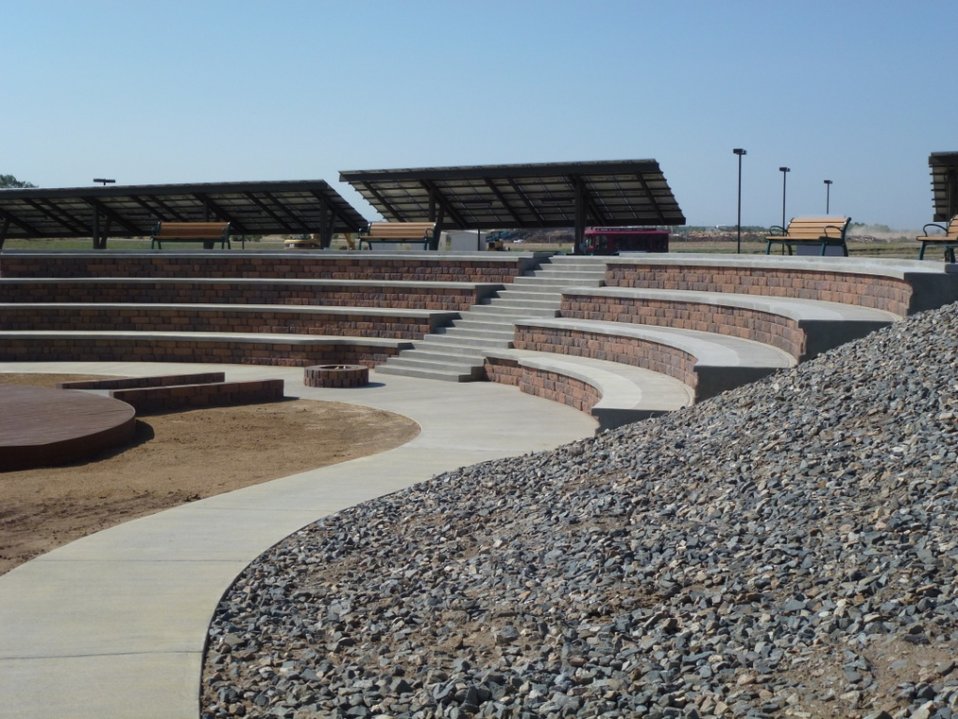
Rocky Mountain Arsenal National Wildlife Refuge’s Amphitheater

Thanks to the work of a Mountain-Prairie Region Refuge Maintenance Action Team (MAT), a new amphitheater was recently erected adjacent to the Rocky Mountain Arsenal National Wildlife Refuge’s visitor center in Commerce City, Colo.

The amphitheater is a fully accessible facility with seating for 175 to 200 spectators. It features a stage and fire pit for special programs. The addition of the amphitheater to the visitor center will enhance interpretive program delivery as part of the facility’s regular visitor services and will be used for special events. Commerce City has also expressed an interest in using the amphitheater for programs of its own.

The project was completed under budget and cost nearly half as much as the bids received from private contractors. According to rough estimates, the U.S. Fish & Wildlife Service saved approximately $70,000. The substantial cost savings was realized by employing the MAT, which is comprised of in-house maintenance workers with various skill sets from several stations across the region. Typically, deferred maintenance dollars pay for the project materials, labor, travel, room and board of MAT members. MAT projects usually take between one to five weeks to complete.

Construction began May 7, 2012 and concluded June 13, 2012 with a one-week pause in the middle of the project to allow MAT members a break. In total, the project took 34 12-hour-work days. The MAT worked more than 2,000 man hours on the project with no time lost due to injury or any safety-related issues.

The Refuge MAT consisted of:
• Rich Iwanski – Bear River Migratory Bird Refuge – Engineering Equipment Operator – Pre-construction organization, MAT team foreman, Equipment Operator and other general work.
• Cameron Fenrich – Mountain-Prairie Regional Office – Civil Engineer – Project Manager, Project Engineer, amphitheater design, on-site inspections, general construction work and overall construction and MAT team organization.
• Steve Raney – Baca National Wildlife Refuge – Maintenance Worker - Equipment Operator and other general work.
• Justin Wanzek – Valley City Wetland Management District – Maintenance Worker- Equipment Operator and other general work.
• Delbert “Skip” Palmer – Lee Metcalf National Wildlife Refuge – Maintenance Worker - Concrete Specialist and other general work.
• Tom Ronning – Rocky Mountain Arsenal National Wildlife Refuge – Range Conservationist - Truck Driver and other general work.